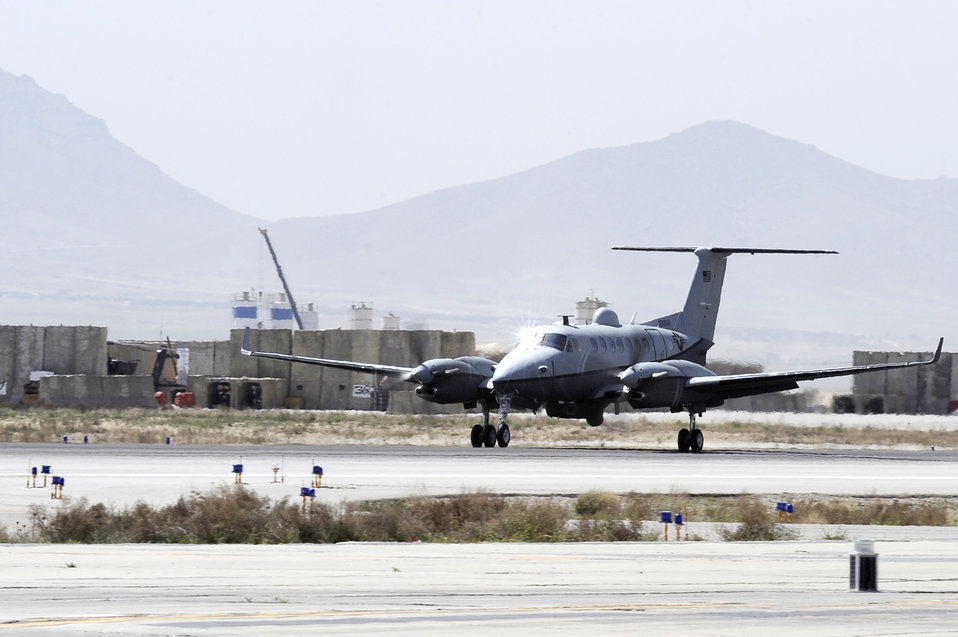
Bagram Airmen provide support

An MC-12 lands after a surveillance mission April 6, 2010 at Bagram Airfield, Afghanistan.